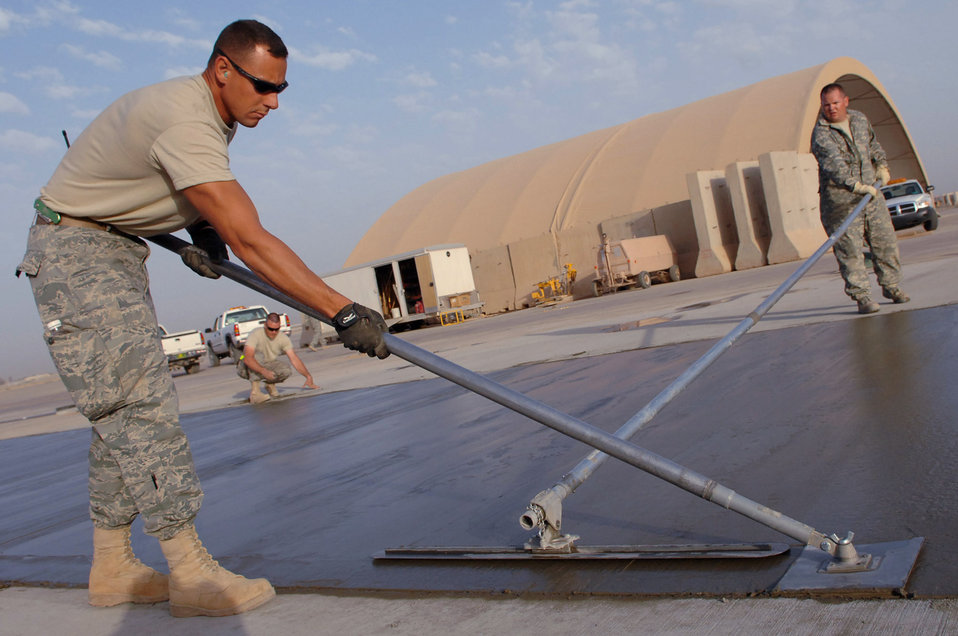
'Dirt Boyz' pave way for aircraft, Airmen

Tech. Sgt. Adam Brothers and Staff Sgt. Joshua Ralston smooth and edge a side of a concrete pad on the flightline May 13 at Balad Air Base, Iraq. Sergeant Brothers is deployed from Patrick Air Force Base, Fla.; Sergeant Ralston is deployed from Eielson Air Force Base, Alaska. Both are 332nd Expeditionary Civil Engineer Squadron heavy equipment operators.